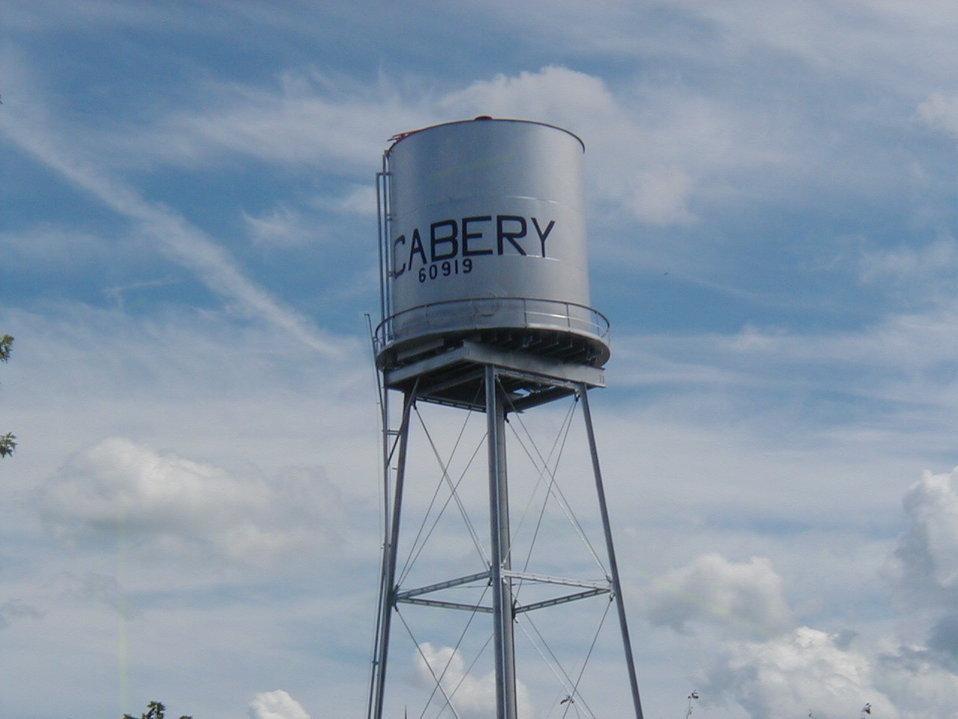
Picture of the Cabery, Illinois water tower.